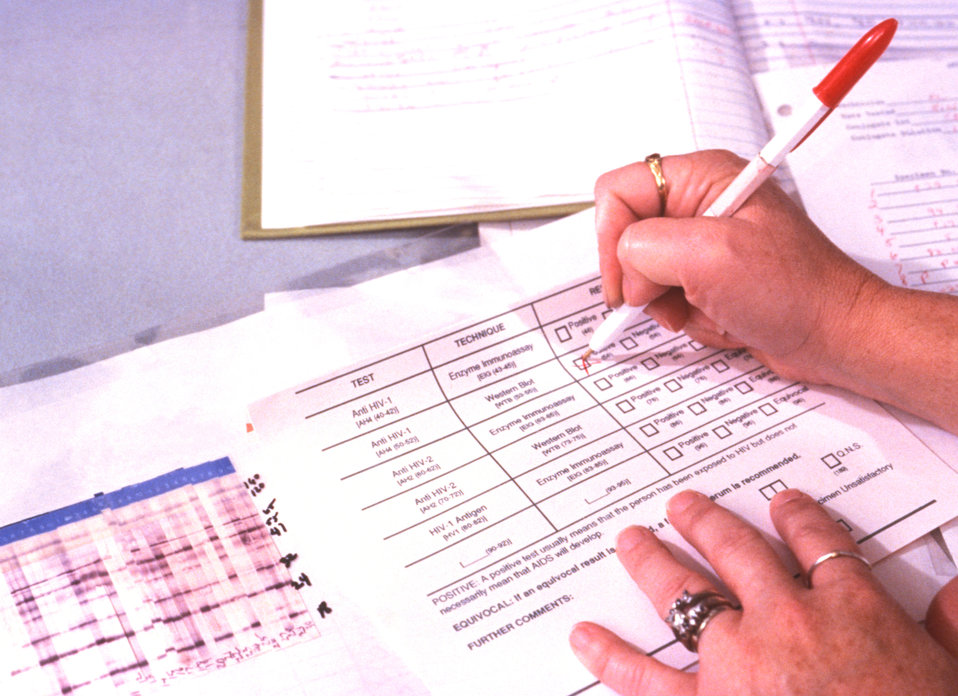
Here a CDC lab technician is filling out an AIDS diagnostic report.